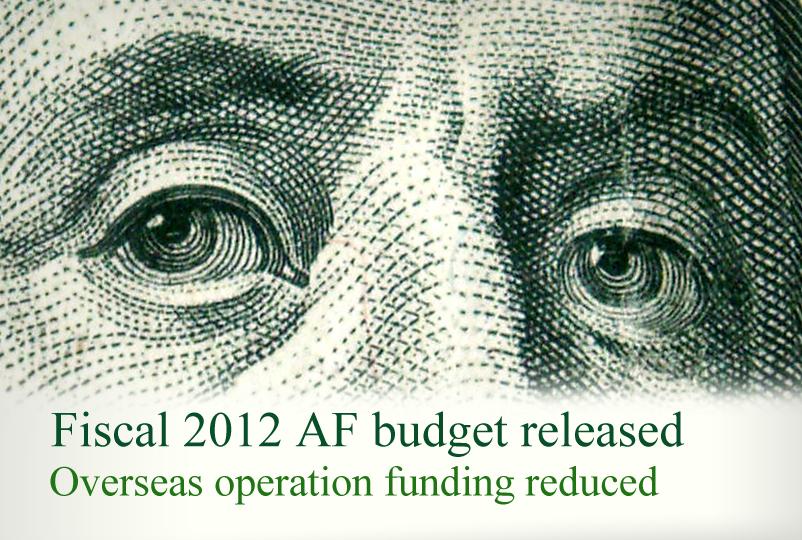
Fiscal 2012 budget released